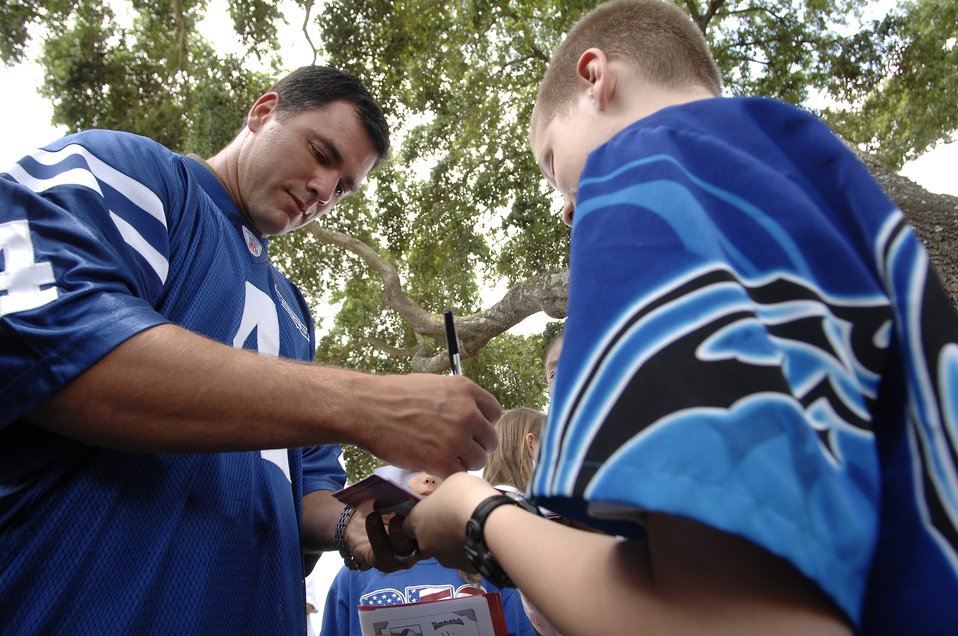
Champs come for a visit

Indianapolis Colts kicker Adam Vinatieri signs an autograph for a student at Randolph Elementary School on Randolph Air Force Base, Texas, June 1. The 2006 Super Bowl champs spent the day visiting with base personnel and school children.